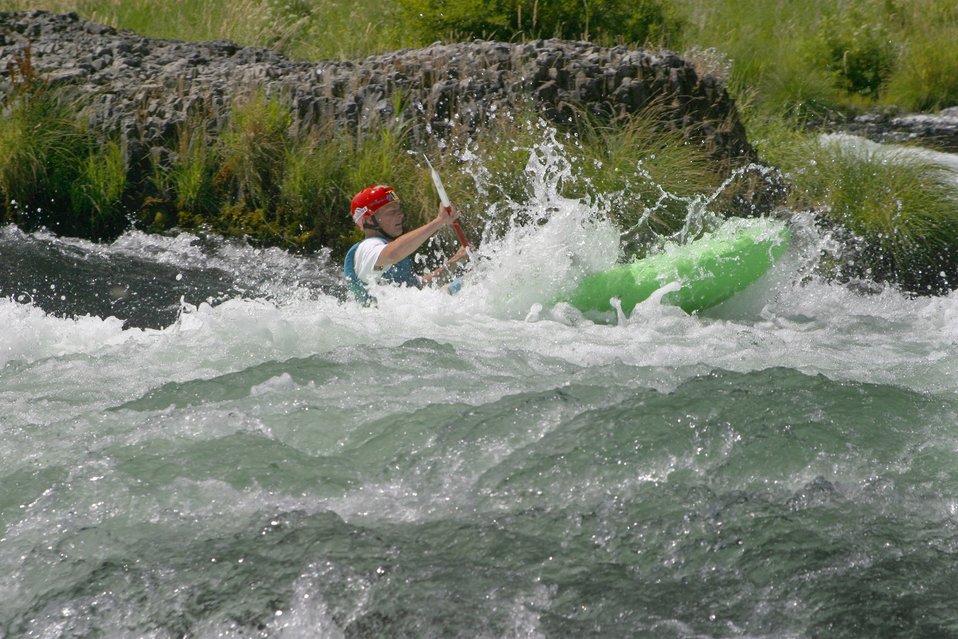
Oak Springs is a Class IV Rapids. The left channel has shallow rocks, large standing waves, turbulent currents and a large hole during high flows. The right channel has a large hole, shallow rocks, and turbulent currents. 7/26/03 Pelton Dam 3600 cfs: Moody Rapids 4300 cfs.